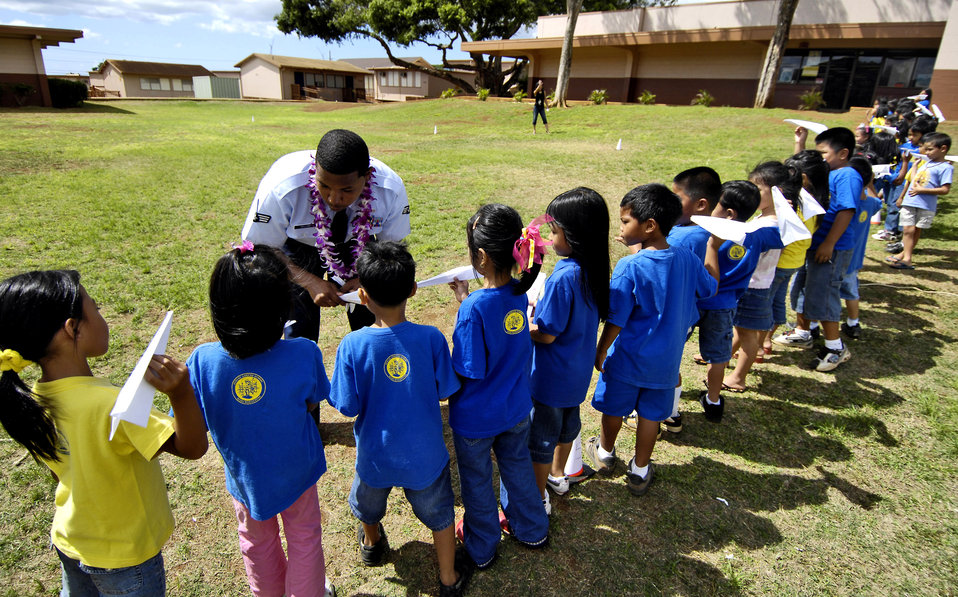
Learning to fly at Air Force Week Honolulu

Senior Airman Andrew William helps children from August Ahrens Elementary School in Waipahu, Hawaii, prepare their paper airplanes for a distance contest Sept. 10 during Air Force Week Honolulu. Approximately 800 Airmen from Hickam Air Force Base, Hawaii, spent their day at 80 local schools on the island of Oahu reading, playing and educating children about the Air Force. Airman William is with the 15th Civil Engineer Squadron.